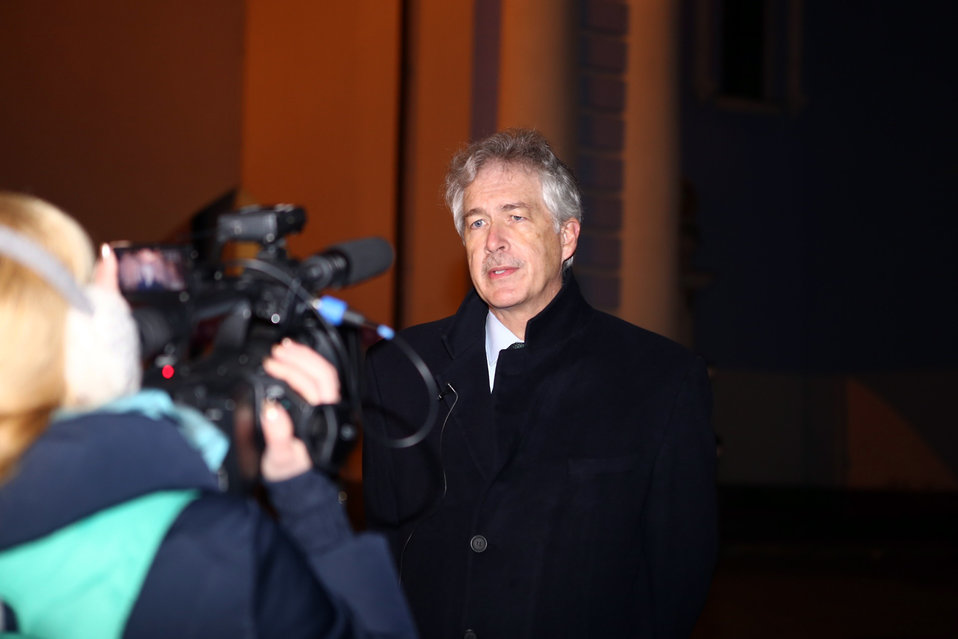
Deputy Secretary Burns Addresses the People of Ukraine

U.S. Secretary of State John Kerry makes a statement to the people of Ukraine in Kyiv on February 25, 2014.